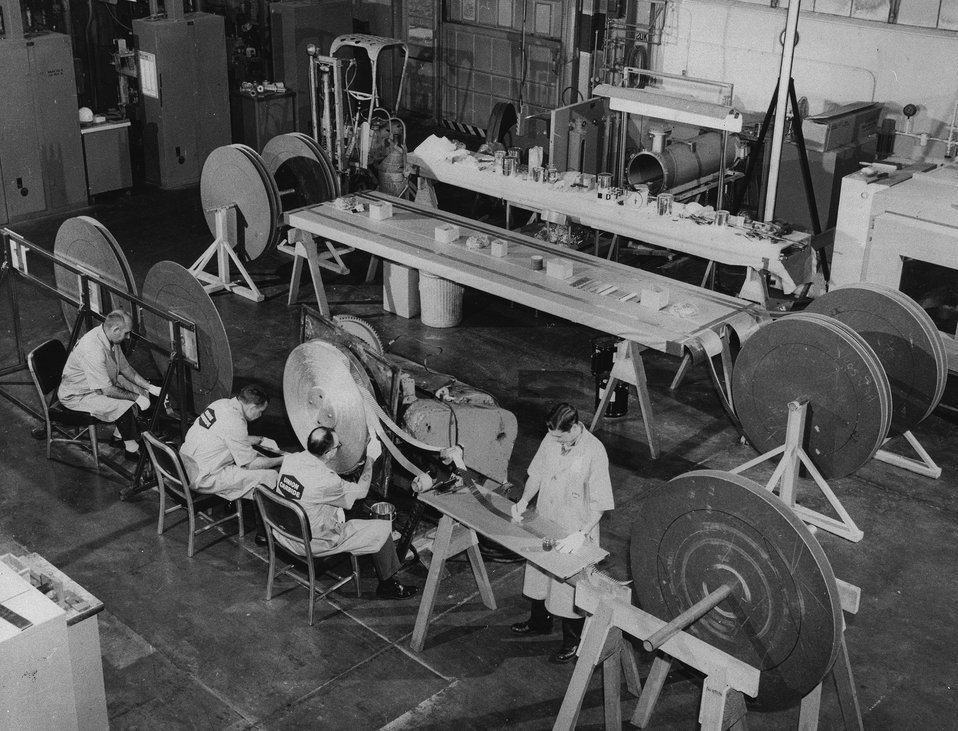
The technical skill and manpower of the AEC's Gaseous Diffusion Plant at Paducah, Kentucky, is being used to support research being conducted at the NASA Lewis Research Center, Cleveland, Ohio, in a study of magnetic fields of large volume and high field intensity. c. 1968